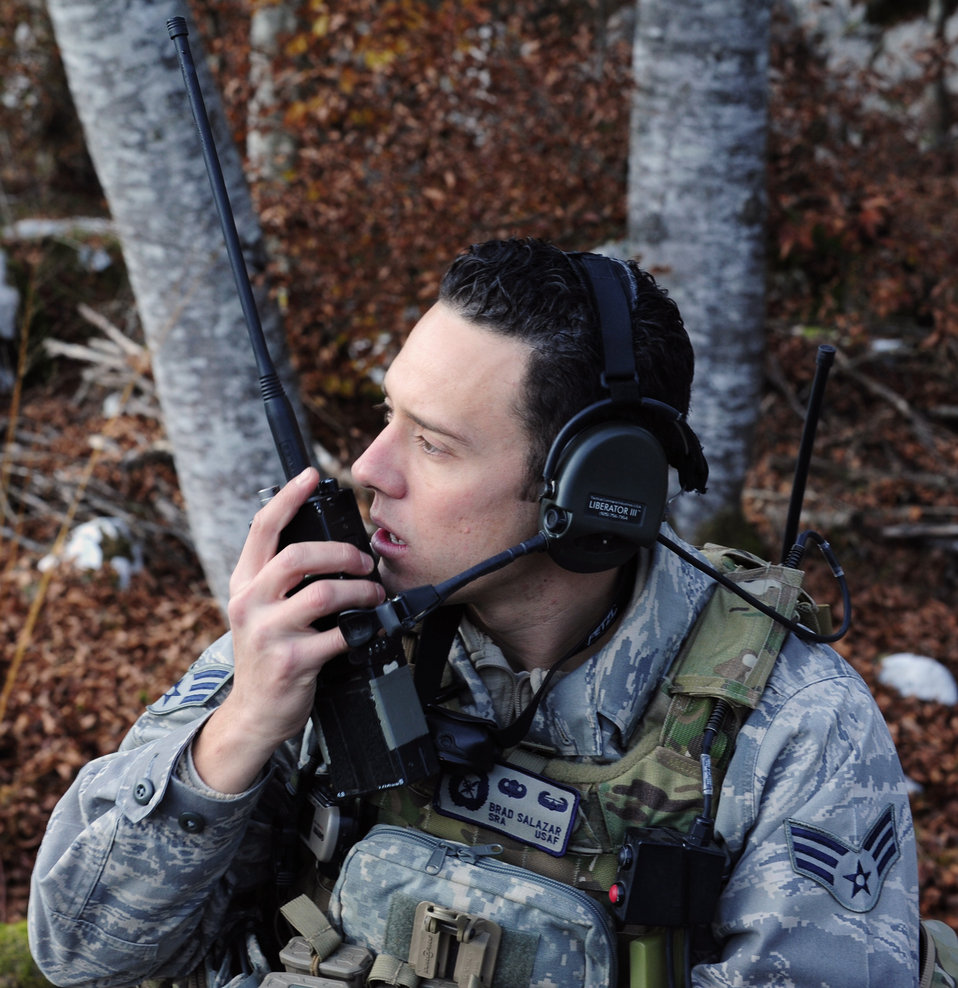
Calling in the big guns

Senior Airman Brad Salazar calls in a simulated air strike Nov. 15, 2011, in Barcis, Italy. This training was to help refine techniques and procedures of tactical command and control of air power assets. Salazar is a tactical air control party operator with the 8th Air Support Operations Squadron.